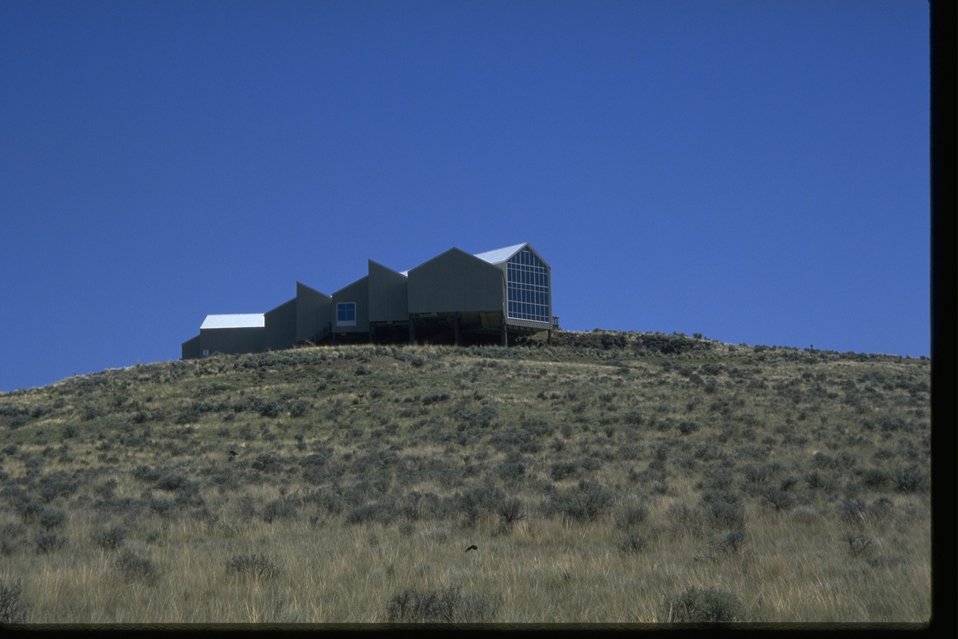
Distant exterior view of the NHOTIC.